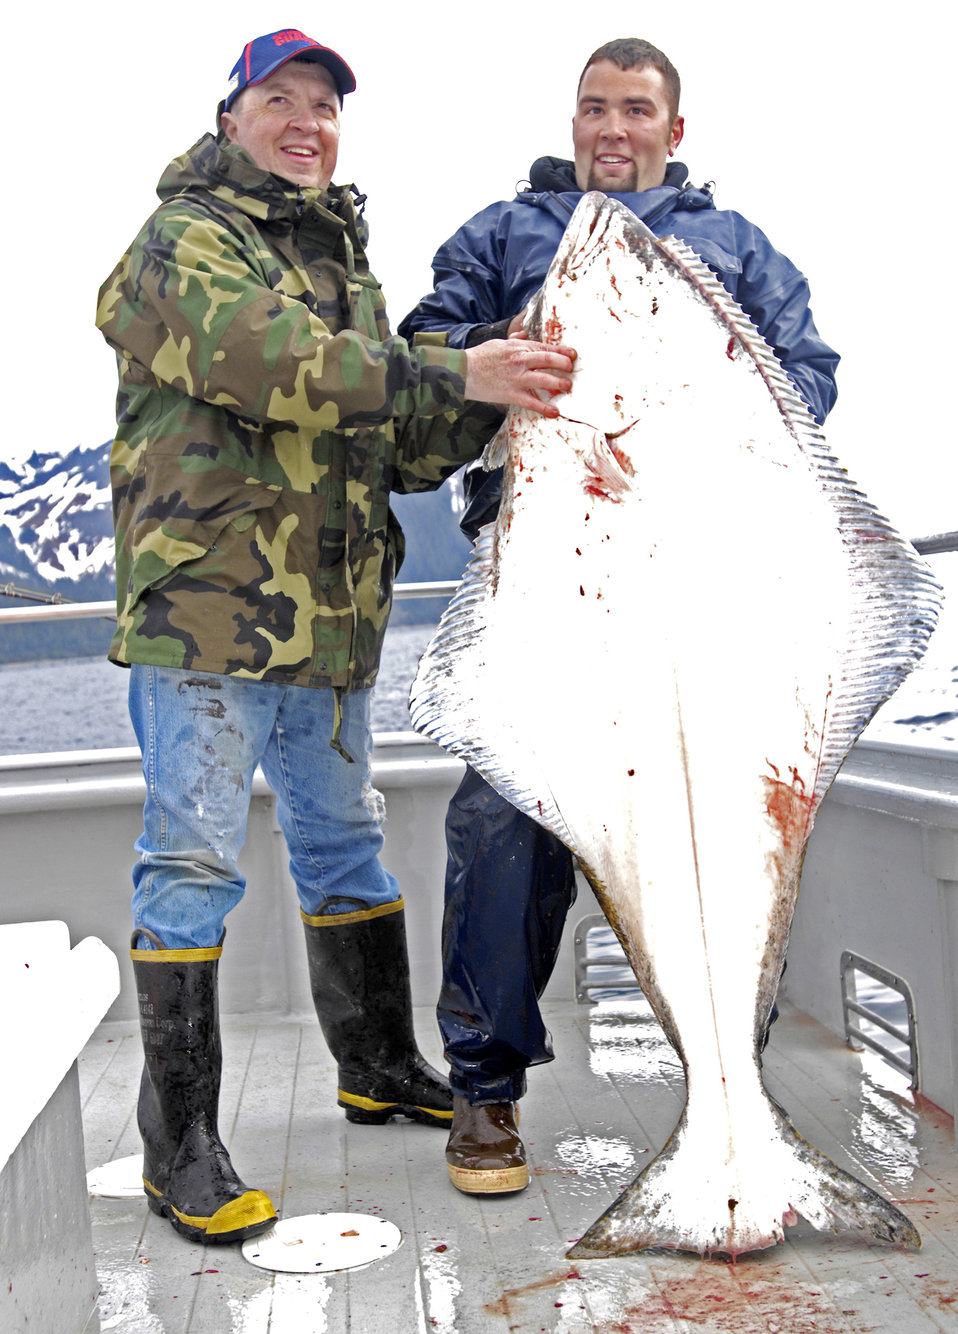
Fishing community gives back to military

Duane Middleton with deck hand Jeff Eide shows the 90-pound halibut he caught May 21 in Seward, Alaska. Mr. Middleton is part of the Alaska Army National Guard and was deployed to Kuwait from July 2006 to November 2007. The tournament, sponsored by the Armed Services YMCA and the Seward Charter Association, is a free day of halibut charter fishing mainly for veterans of the Iraq and Afghanistan wars.